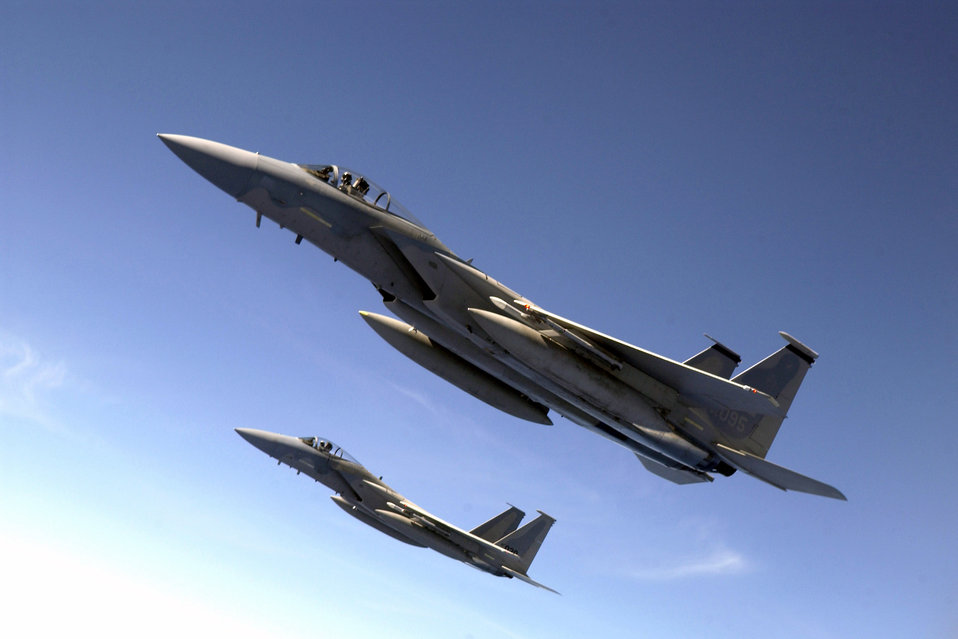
Valiant Shield gas station

F-15 Eagles fly over the Pacific during Valiant Shield Aug. 9. The F-15s are from the 44th Fighter Squadron at Kadena Air Base, Japan. During the exercise, Air Force aircraft and Airmen from stateside bases and Kadena AB will comprise part of an expeditionary air wing based at Andersen Air Force Base, Guam. These forces will participate in integrated joint training with Navy and Coast Guard forces.